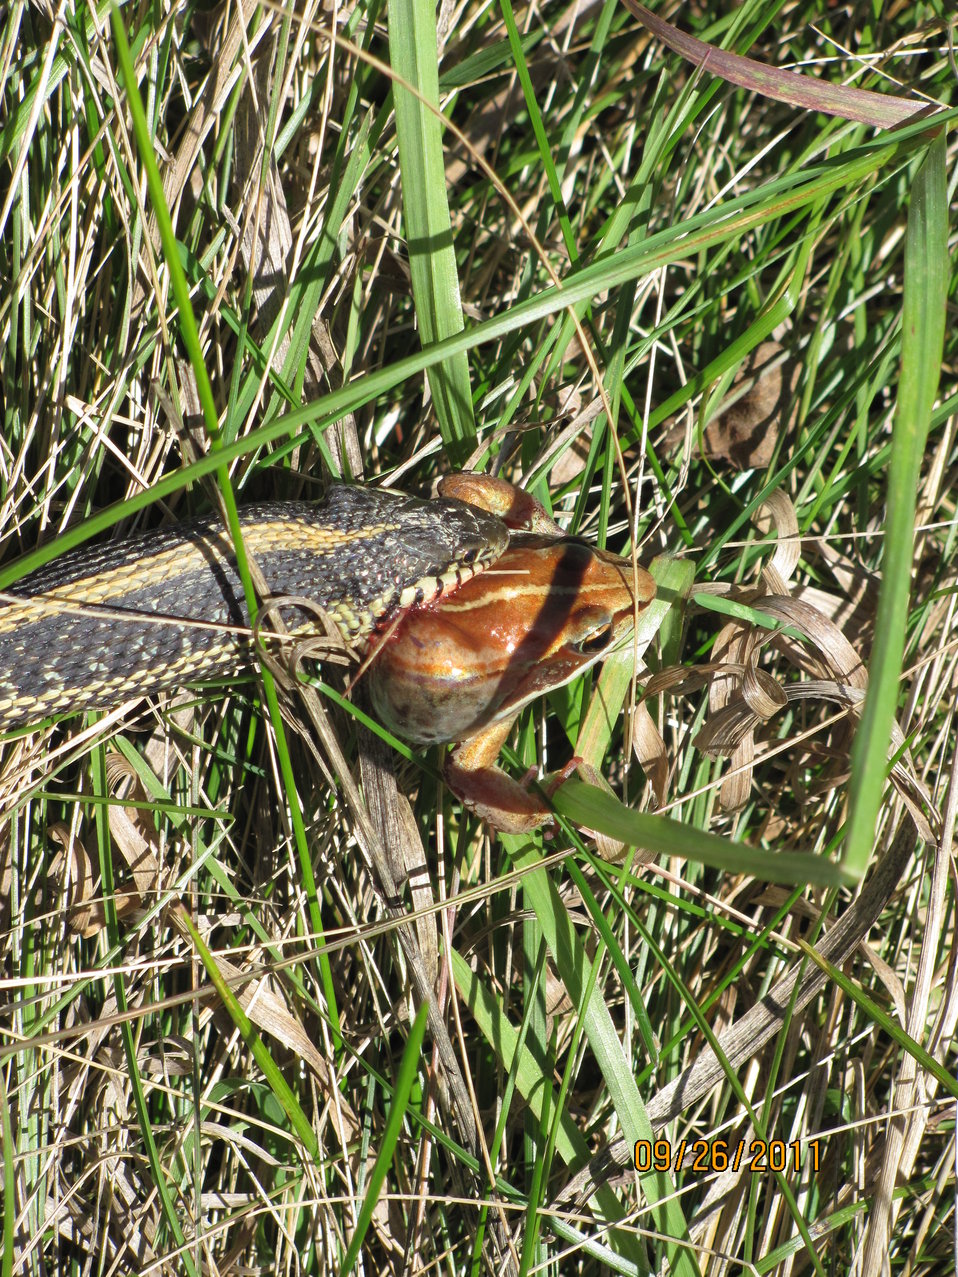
Common Garter Snake eats a Wood Frog

This Common Garter Snake (Thamnophis sirtalis) and Wood Frog (Rana sylvatica) were found on the Woodworth Station at the Chase Lake National Wildlife Refuge Headquarters in North Dakota.